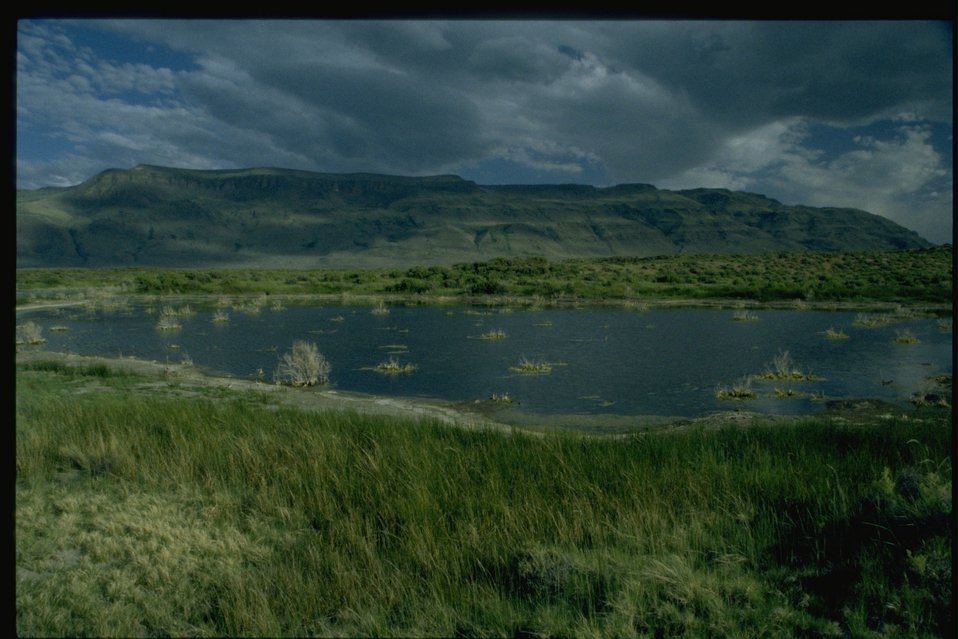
Flagstaff Lake, Warner Wetlands.